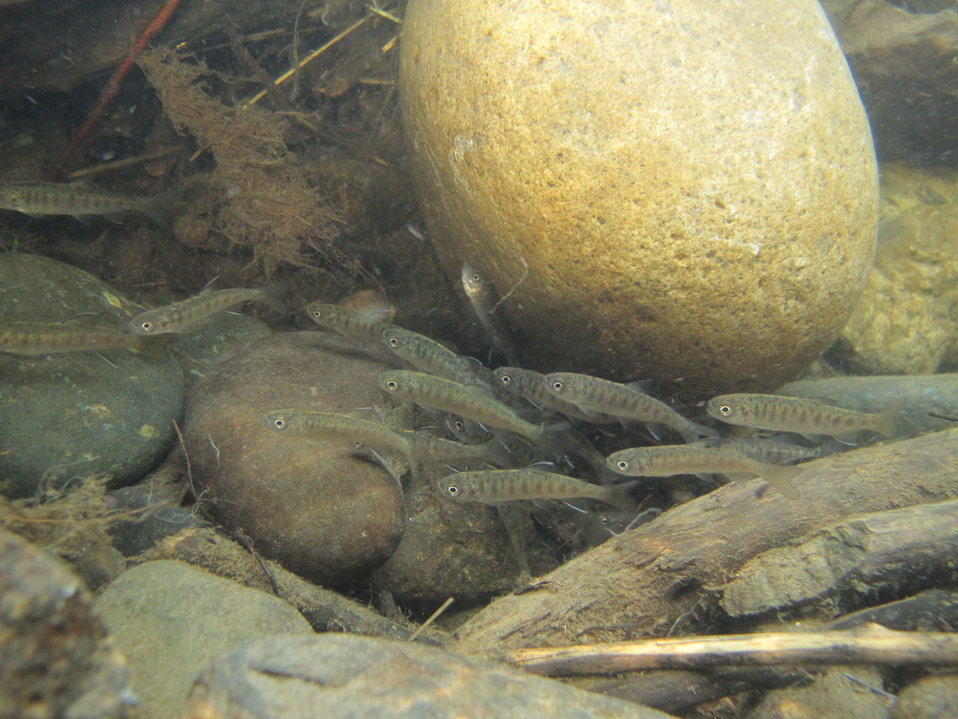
Juvenile coho salmon

Juveniles schooling in Caswell Lake's stream outlet (Mat-Su Valley, Alaska).